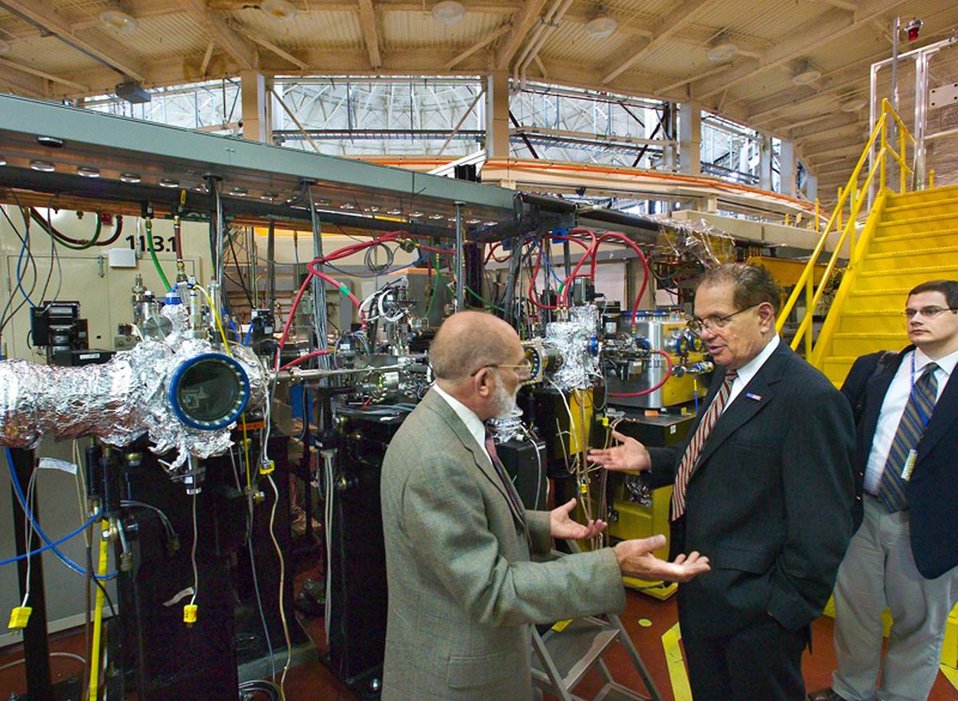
DURING A VISIT TO LAWRENCE BERKELEY NATIONAL LABORATORY, DR. RAYMOND ORBACH, DIRECTOR, OFFICE OF SCIENCE, SPEAKS WITH JANOS KIRZ, THE ACTING DIRECTOR OF THE ADVANCED LIGHT SOURCE AT THE LAB.

LBNL'S ADVANCED LIGHT SOURCE IS A NATIONAL USER FACILITY THAT GENERATES INTENSE LIGHT FOR SCIENTIFIC AND TECHNOLOGICAL RESEARCH. AS ONE OF THE WORLD'S BRIGHTEST SOURCES OF ULTRAVIOLET AND SOFT X-RAY BEAMS AND THE WORLD'S FIRST THIRD GENERATION SYNCHROTRON LIGHT SOURCE IN ITS ENERGY RANGE, THE ALS MAKES PREVIOUSLY IMPOSSIBLE STUDIES POSSIBLE. THE FACILITY WELCOMES RESEARCHERS FROM UNIVERSITIES, INDUSTRIES AND GOVERNMENT LABORATORIES WORLD WIDE.